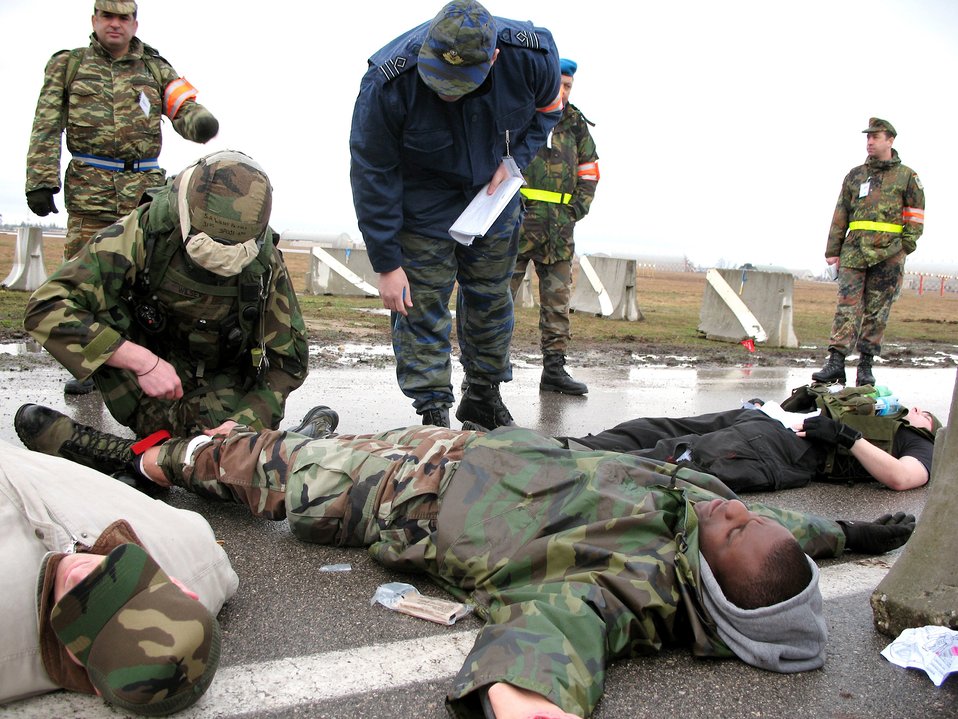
Aviano Airmen put skills to test

Senior Airman Patrick Wilsey (left) performs first aid on a role-playing injured demonstrator after a simulated bomb explosion. Greek NATO Inspector Capt. Panousis Dimitris verifies Airman Wilsey is performing the correct procedures. Airman Wilsey is with the 31st Security Forces Squadron.